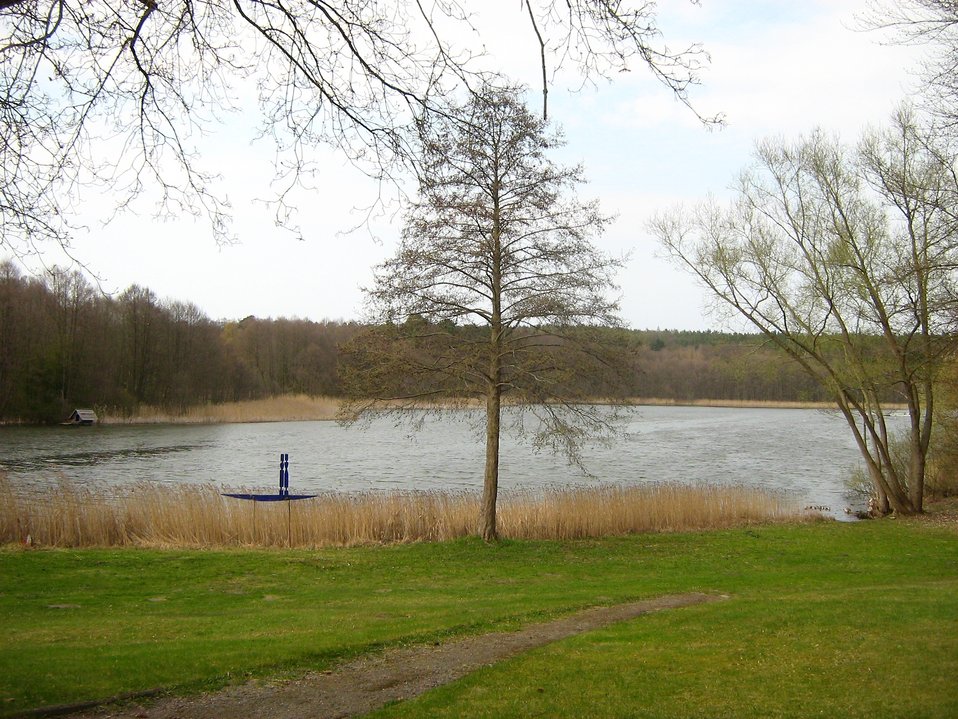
Deutsch: Der Dagowsee bei Neuglobsow im Rheinsberger Seengebiet. Object location 53° 09′ 04.21″ N, 13° 03′ 13.54″ E View this and other nearby images on: OpenStreetMap - Google Maps - Google Earth 53.151169; 13.053761